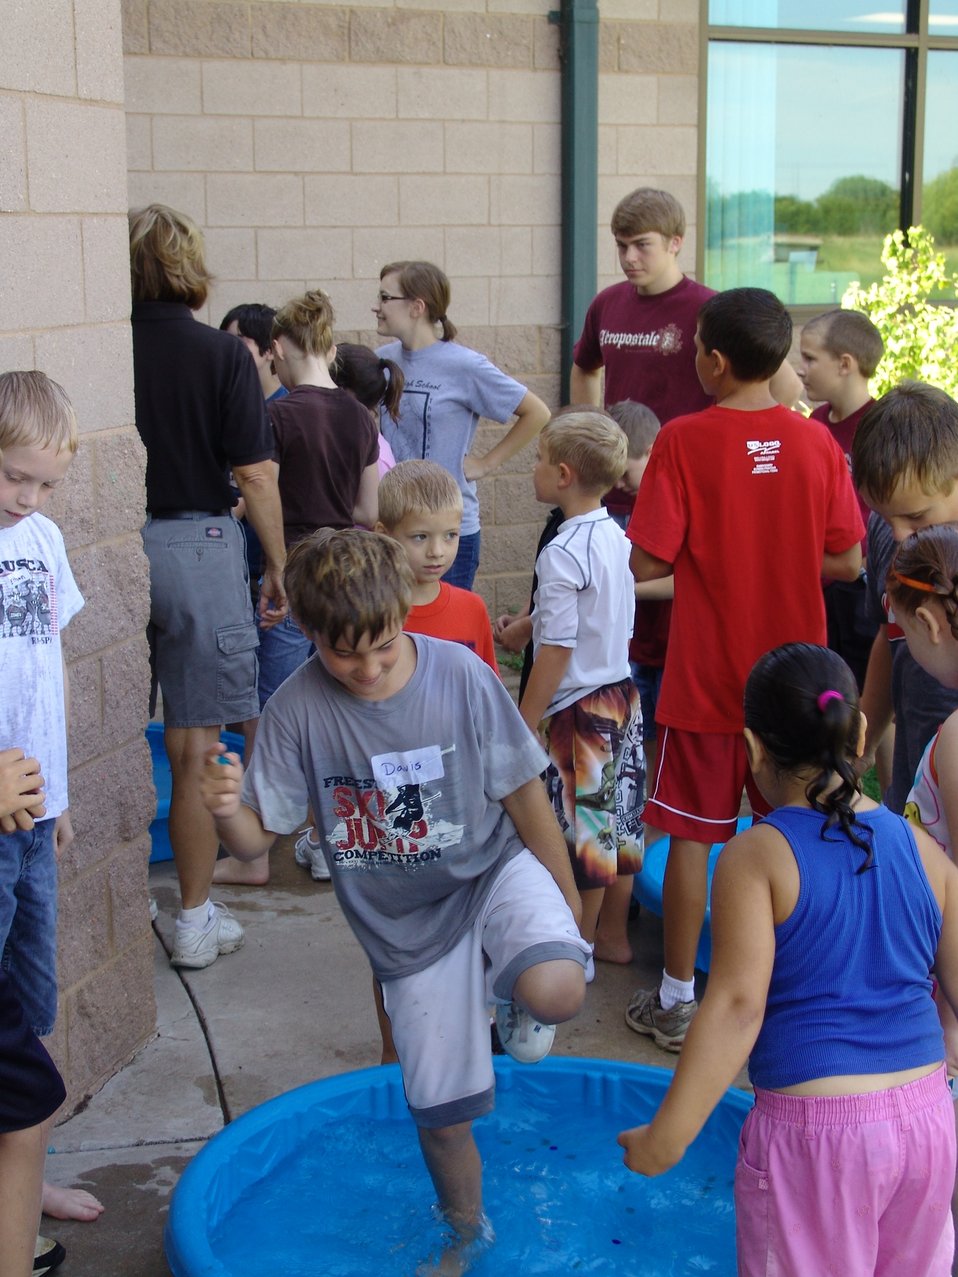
Great Plains Nature Center

Wet & Wild is a summer day camp at the Great Plains Nature Center in Kansas, where kids of all ages enjoy fun and educational activities.